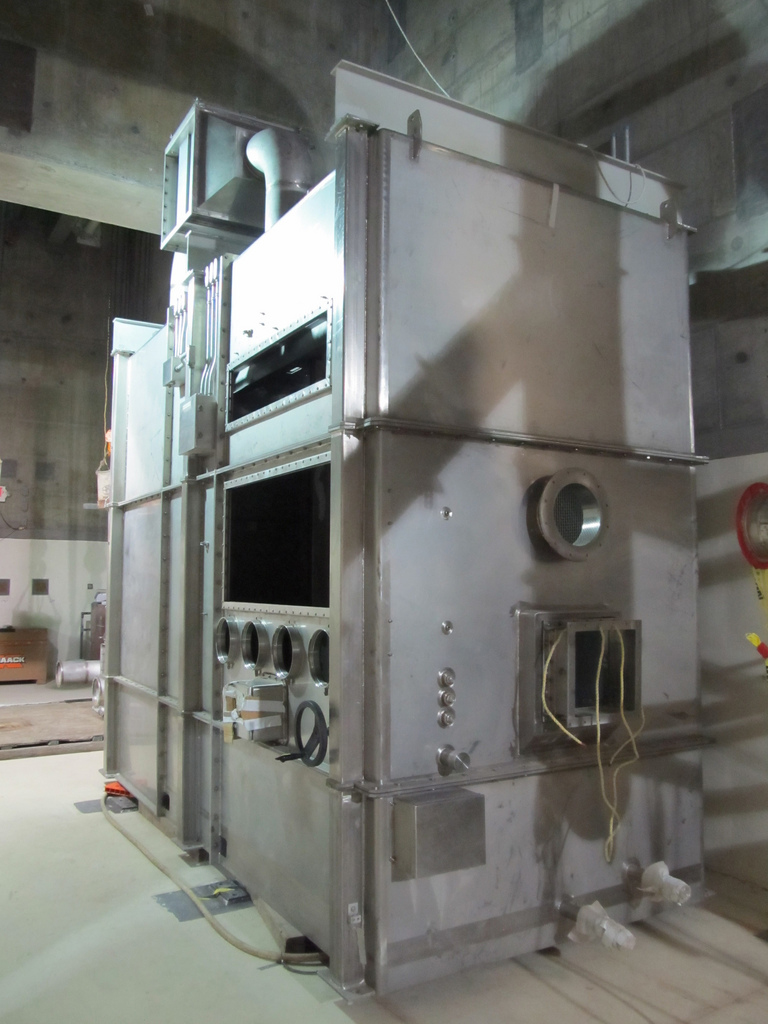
Hanford Waste Treatment Plant completes important mechanical installation in Pretreatment Facility

The decontamination booth is the first significant piece of permanent plant equipment to be placed inside the Pretreatment Facility that is not required to support the civil construction progress. The stainless steel booth measures 14.5 feet tall, 15 feet long and 7 feet wide.